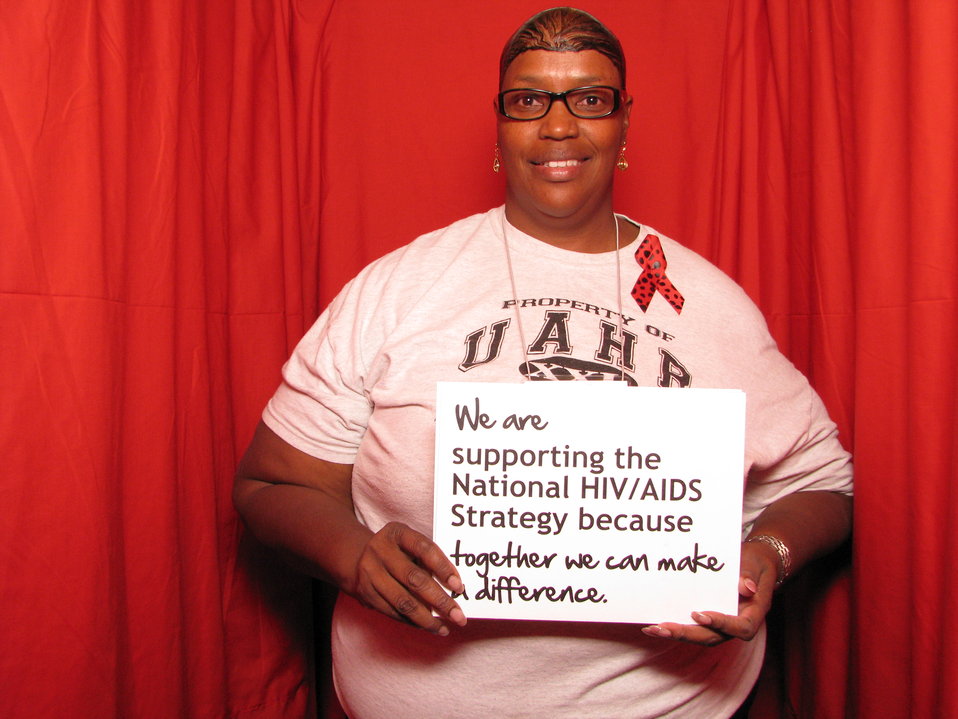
We are supporting the National HIV/AIDS Strategy because together we can make a difference.

From the AIDS.gov photo booth at the U.S. Conference on AIDS, September 2010 (Orlando, FL).